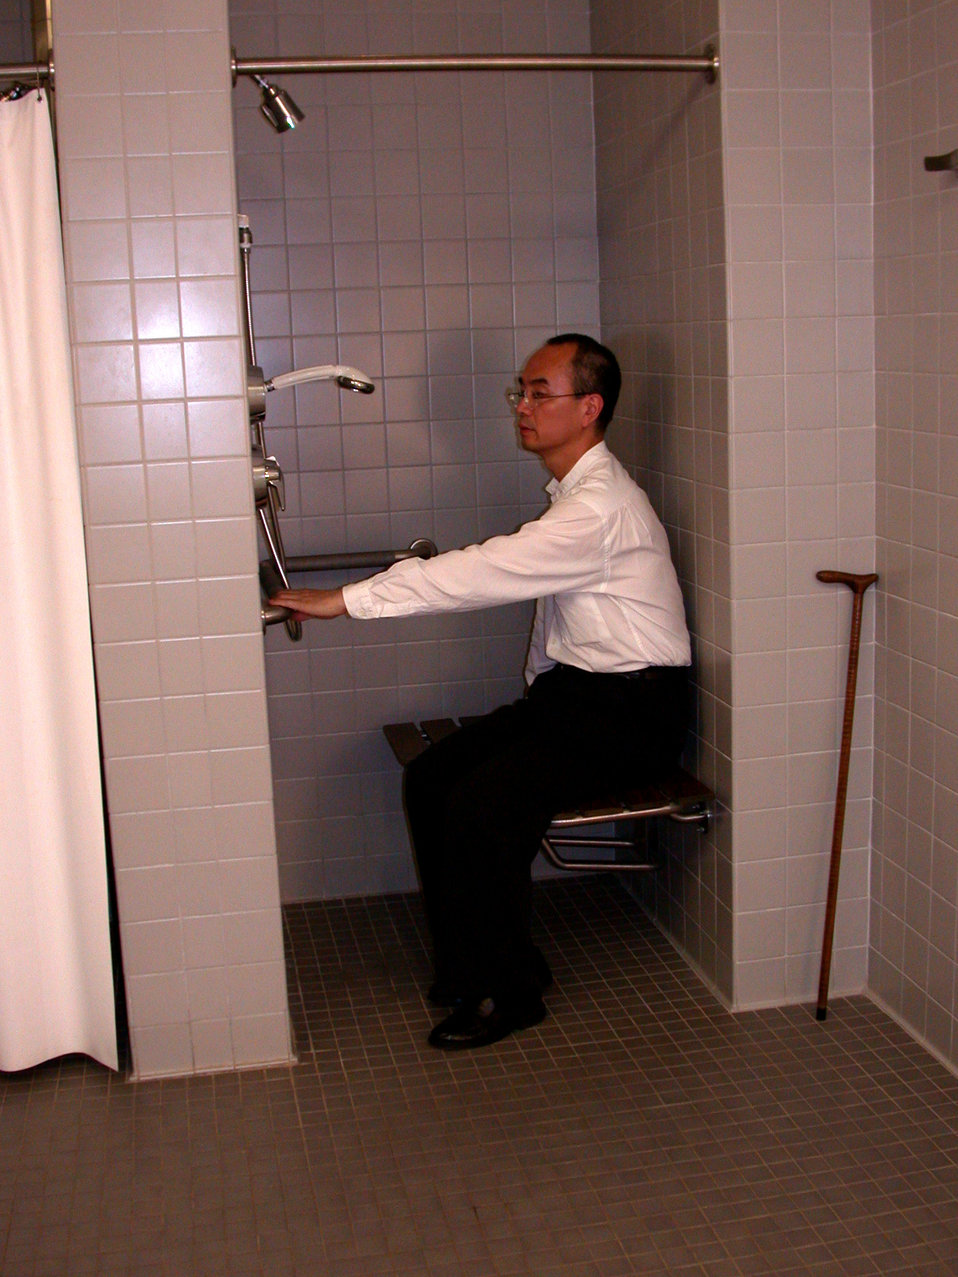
This image showed a man sitting on a folding, wall mounted seat in the down position inside a small 3' x 3', 'curbless' shower. The person was demonstrating the reach required, in order to attain a grasp of the grab bar on the wall opposite this seat. The small size is appropriate for people who are ambulatory, or those who can transfer off of a wheelchair. It is small enough to fit in many bathrooms. His cane, resting next to the shower, was a reminder that curbless showers are usable by all, and particularly useful to those who may be ambulatory, but who may not be able to stand for a long period of time.